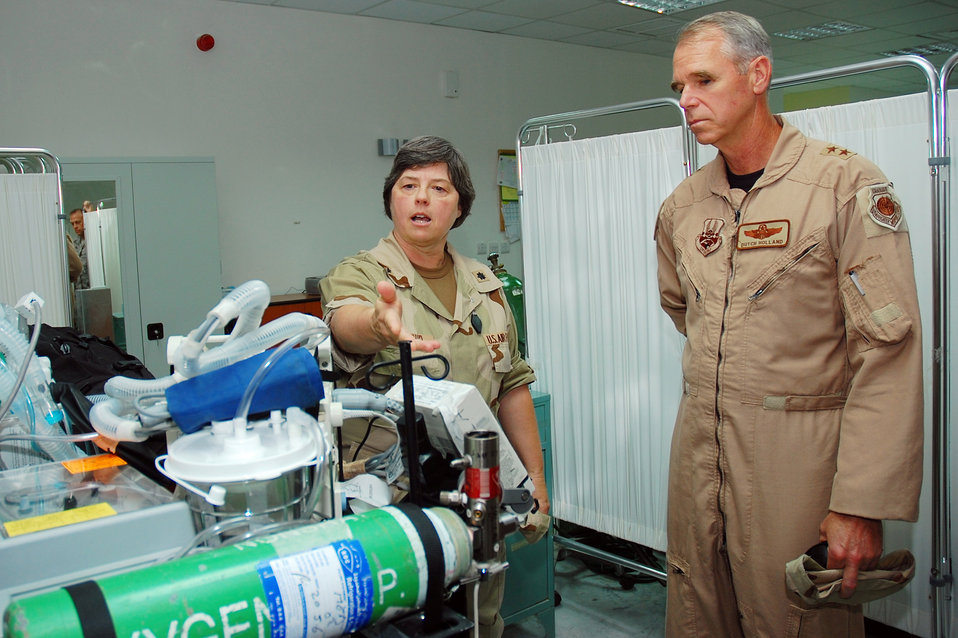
CENTAF vice commander: Airmen performing wonderfully

Lt. Col. Fawn McCloud demonstrates the functions of the uni-vent portable ventilator for Maj. Gen. William L. Holland Sept. 30 at the Contingency Aeromedical Staging Facility in Southwest Asia. General Holland is the vice commander of 9th Air Force and the deputy commander of U.S. Central Command Air Forces. Colonel McCloud, a 386th Expeditionary Medical Group chief nurse, is deployed from Travis Air Force Base, Calif.